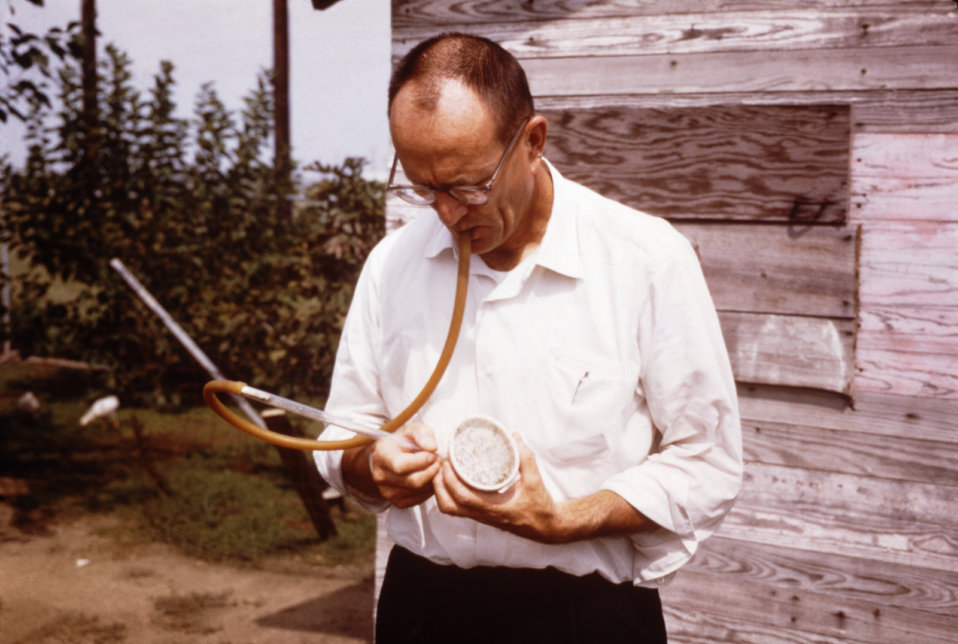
This CDC field researcher is using a mouth aspirator to discharge mosquitoes from a collection tube to a container.